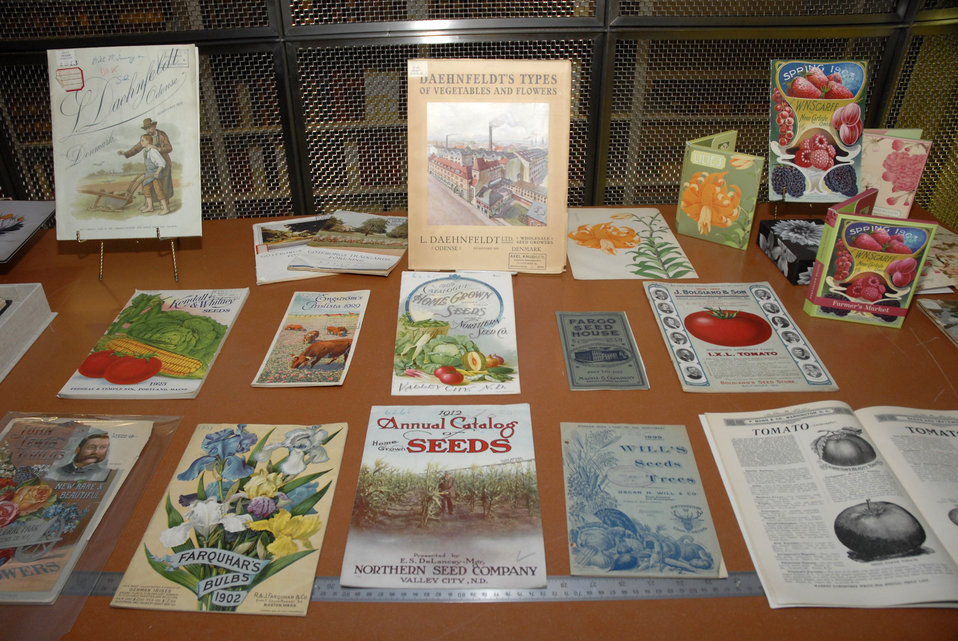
The Special Collections area contains rare agricultural books, brochures and seed packets that are stored at the U.S. National Agricultural Library (NAL) in Beltsville, MD on August 22, 2008. NAL is one of the world's largest agricultural research libraries, and serves as a national library of the U.S. and as the library of the U.S. Department of Agriculture (USDA). The library is one of four national libraries of the U.S. (along with the Library of Congress, the National Library of Medicine, and the National Library of Education). It is also the coordinator for the Agriculture Network Information Center, a national network of state land-grant institutions and coordinator for USDA field libraries. NAL was established on May 15, 1862, by the signing of the Organic Act by Abraham Lincoln. It served as a departmental library until 1962, when the Secretary of Agriculture officially designated it as the National Agricultural Library. USDA photo Alice Welch.